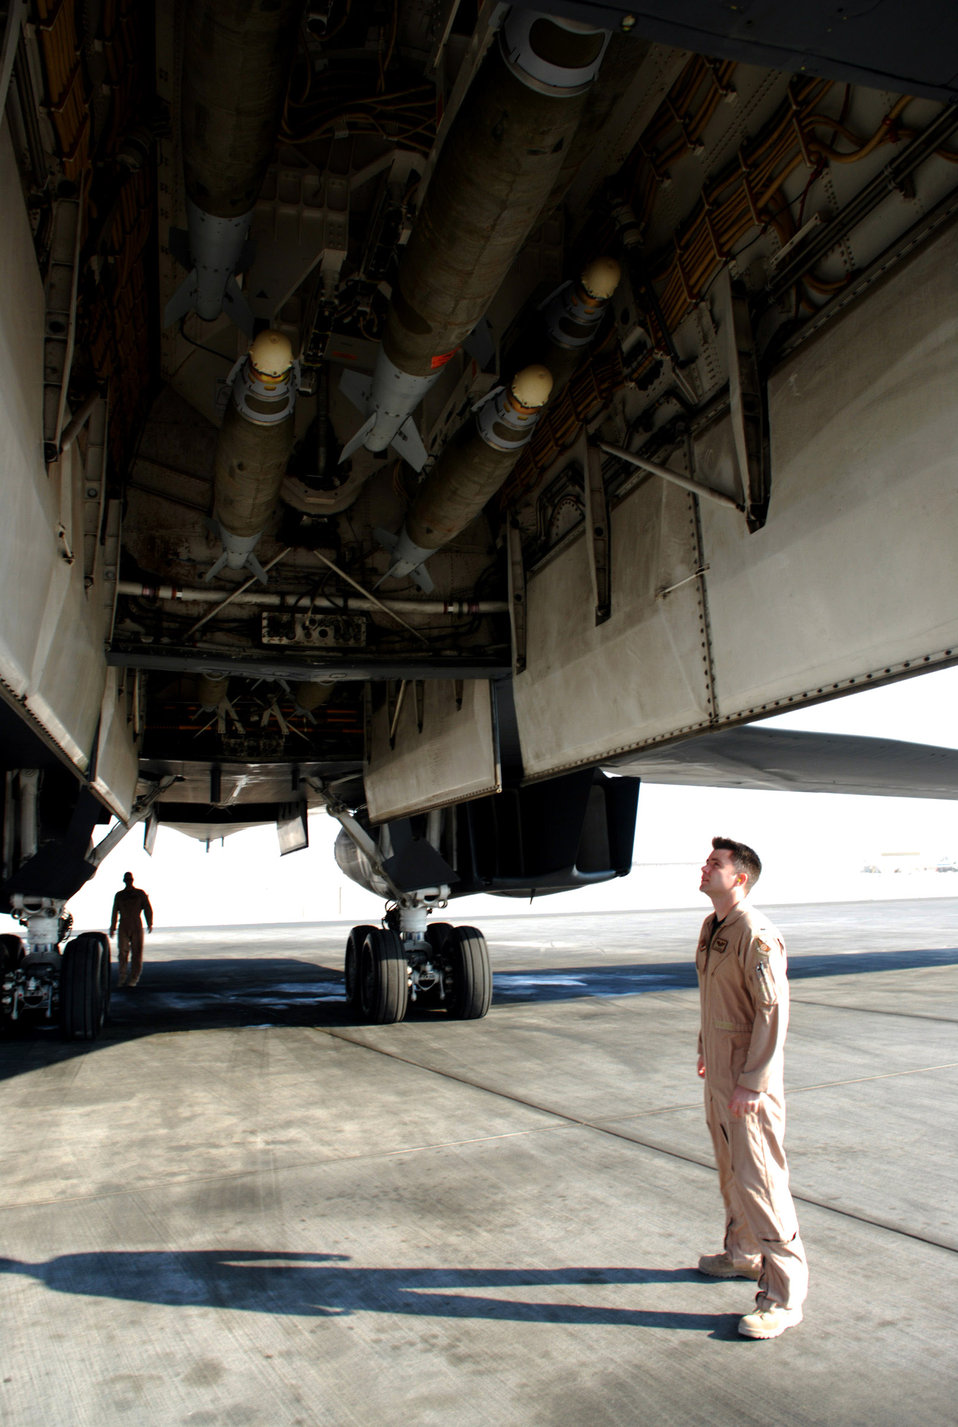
Getting a B-1B ready to launch

1st Lt. Jason Edwards checks the bomb load of a B-1B Lancer Dec. 29 as he and the rest of the aircrew preflight check the bomber prior to a mission. Lieutenant Edwards is with the 9th Expeditionary Bomb Squadron at an air base in Southwest Asia.